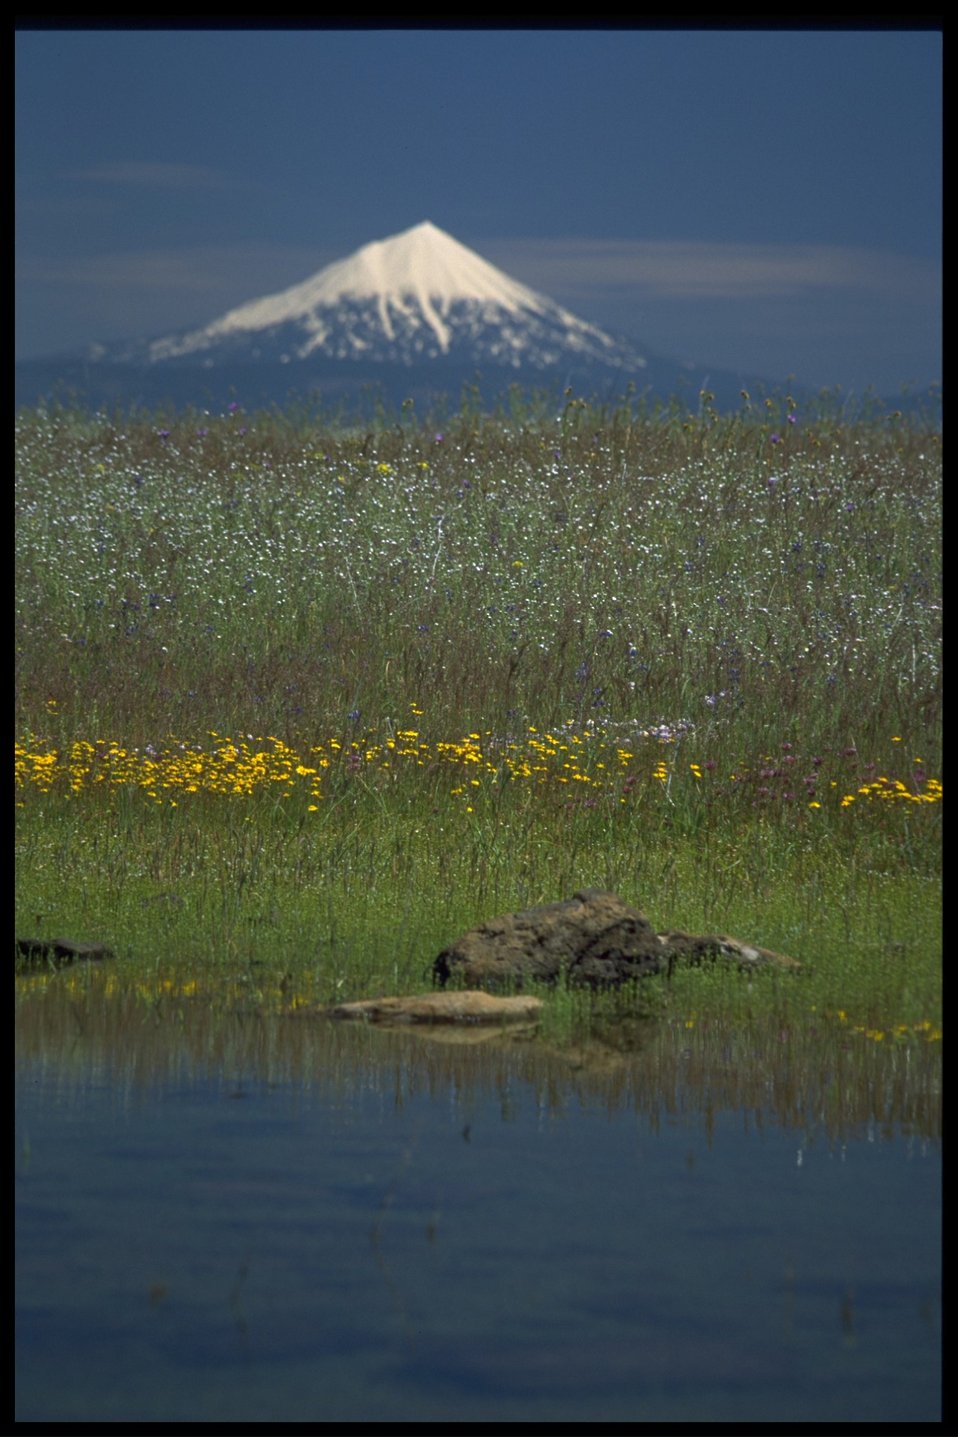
Scenic view of Mt. McLoughlin, vernal pools, Lasthenia californica, Plagiobothrys fulvus, Dichelostemma, and Amsincka intermedia.